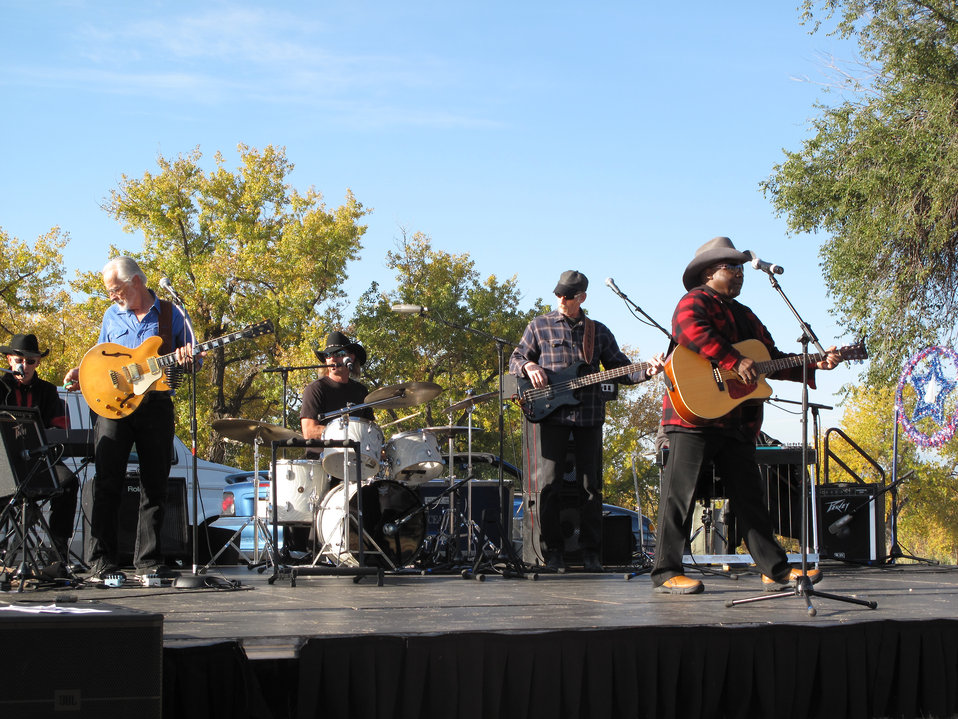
Band Performs

Rudy Grant and the Buffalo Riders perform at the Refuge Round-up 2010.